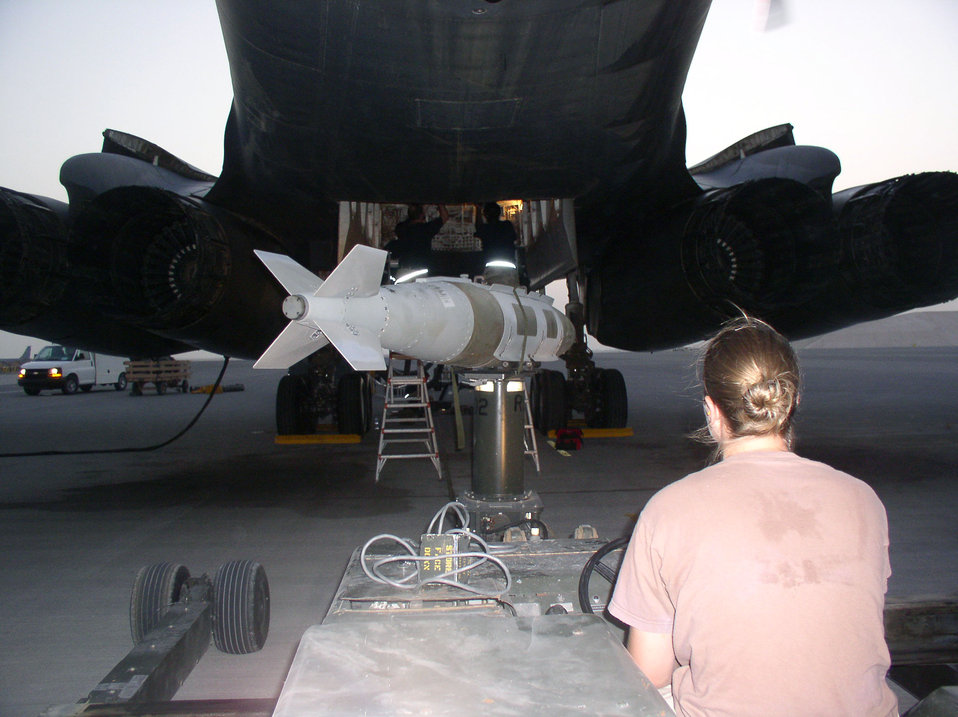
B-1 Lancers join 379th fleet

Senior Airman Tiffany Sommers positions a Guided Bomb Unit-31 Joint Direct Attack Munition for insertion in the aft bomb bay of a B-1 Lancer attached to the 9th Expeditionary Bomber Squadron. Members of the 9th EBS now call the 379th Air Expeditionary Wing home after they were permanently assigned here Aug. 16. Airman Sommers is an aircraft armament systems specialist.